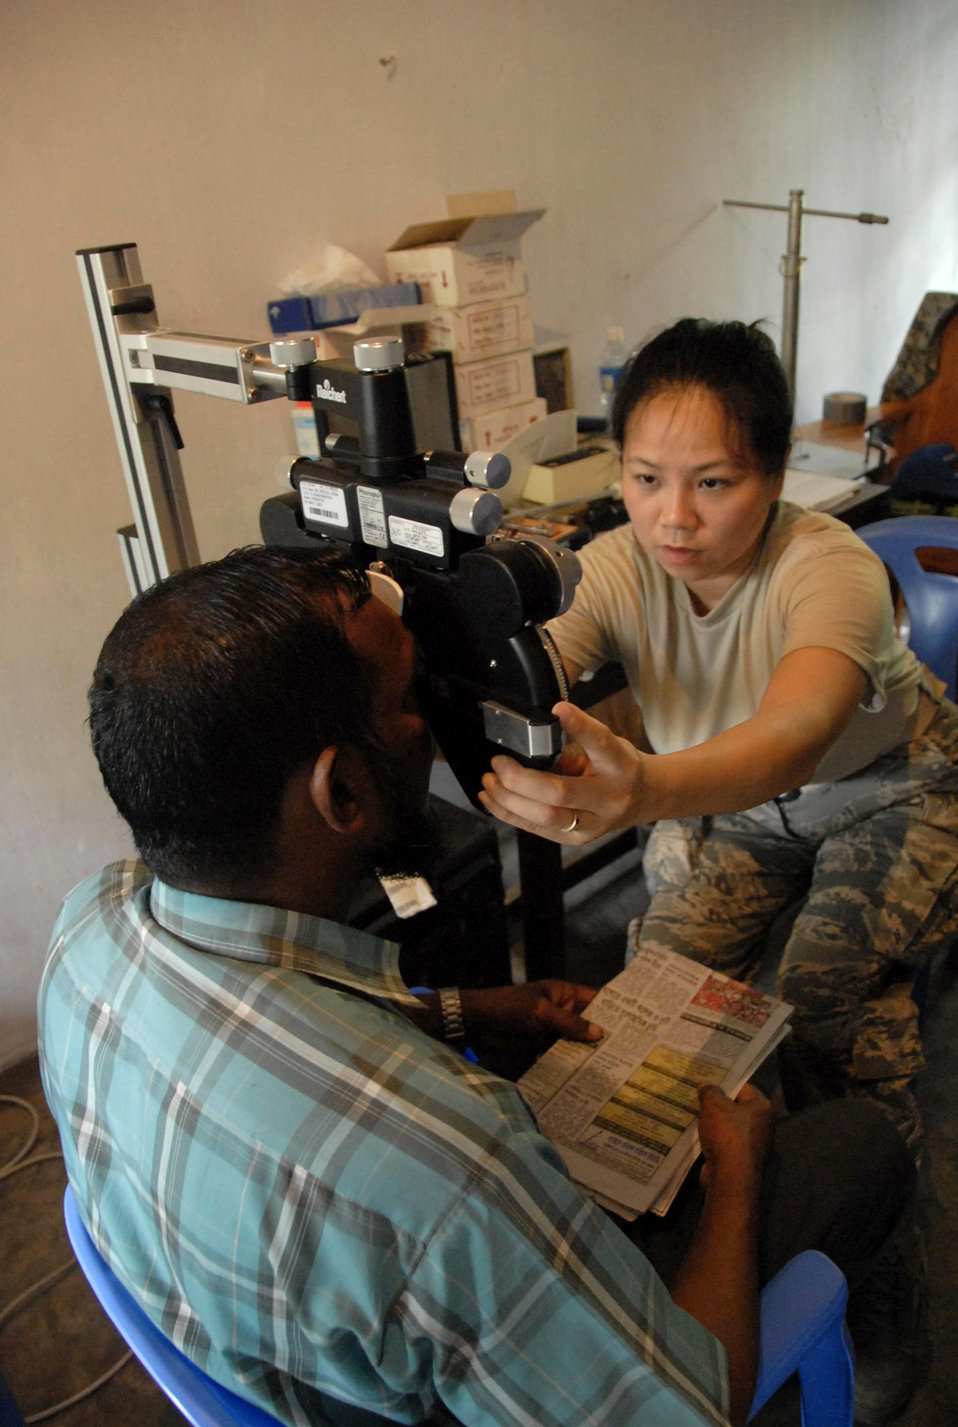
Patient care top priority

Maj. Thuy Tran administers an eye exam to a Bangladeshi citizen June 13, 2010, at Monirampur Regional Training Center in Jessore, Bangladesh, as part of Operation Pacific Angel. Operation Pacific Angel is a joint and combined humanitarian assistance operation conducted in the Pacific area of responsibility to support U.S. Pacific Command's capacity-building efforts. Major Tran is an optometrist from the Oregon Air National Guard.